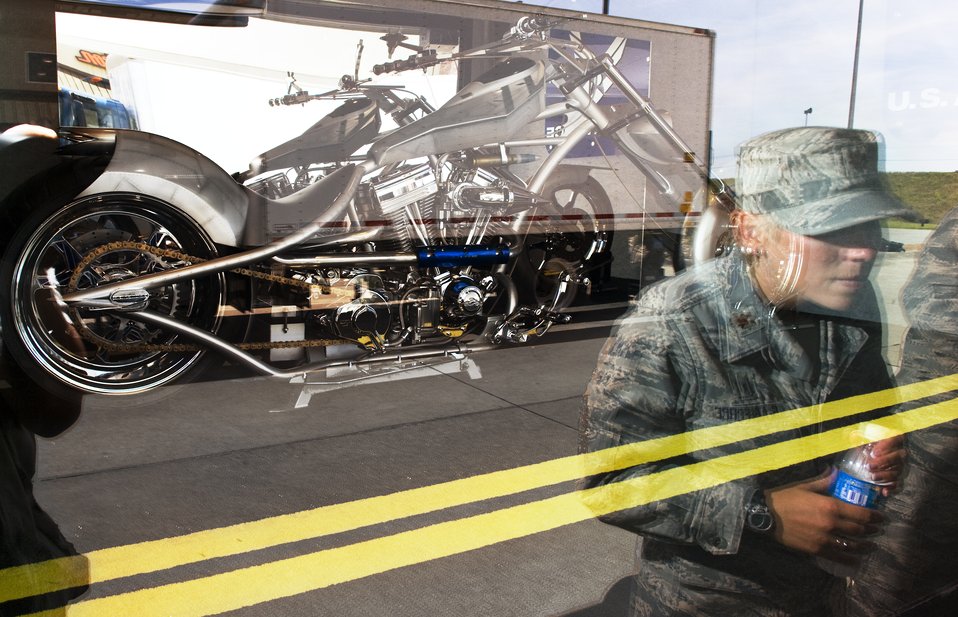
Hog wild

Maj. Sharon Gober (reflected in glass) peers through the display window of the Air Force Orange County Chopper on display at Dillon Brothers Harley-Davidson as part of Air Force Week in the Heartland Aug. 14 in Omaha, Neb.